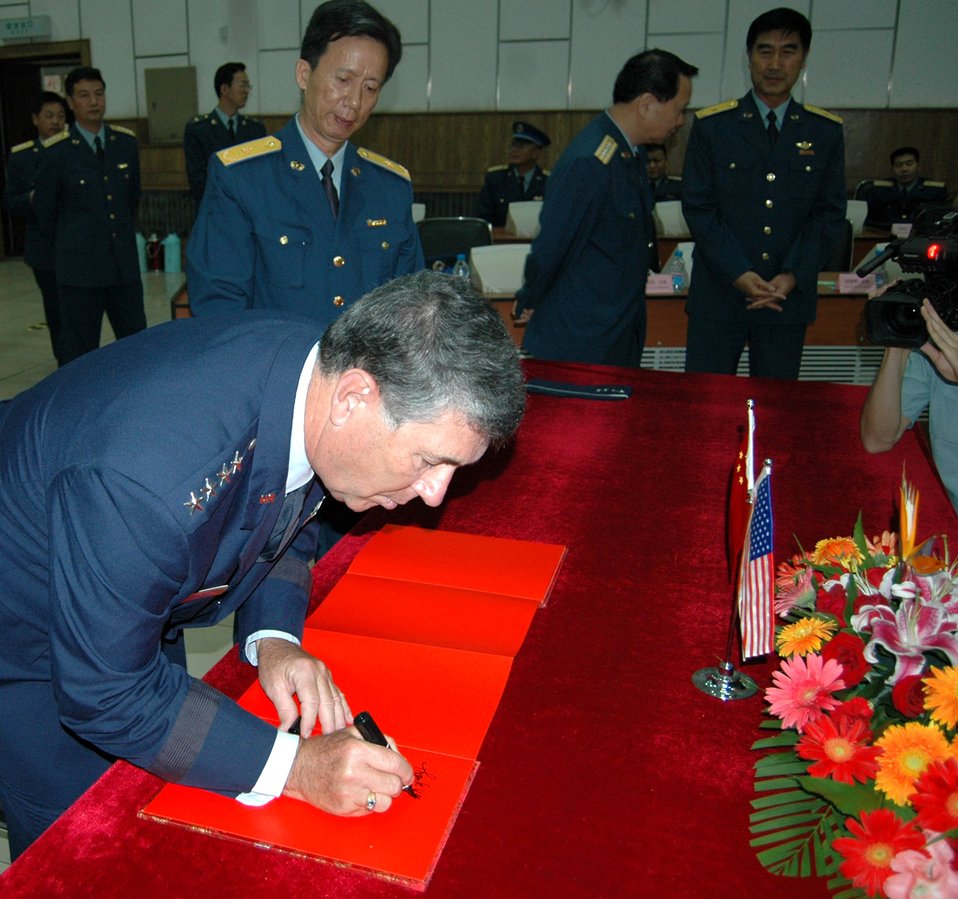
Chinese military hosts PACAF commander

Gen. Paul V. Hester signs a guest book as Maj. Gen. Zhong Wanfu looks on July 24 at the People's Liberation Army Air Force Command College in Beijing. The command college is the People's Liberation Army Air Force's highest professional military education school and has students ranging from captain to senior colonel, the equivalent of an American brigadier general. General Hester is the commander of Pacific Air Forces, and General Wanfu is the People's Liberation Army Air Force Command College deputy commandant.